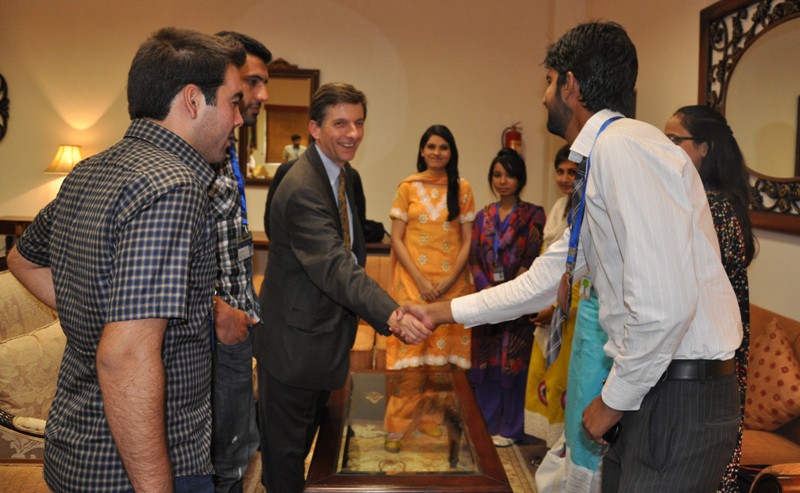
U.S. Agency for International Development (USAID) Mission Director Dr. Andrew Sisson talking meeting with FCC students.